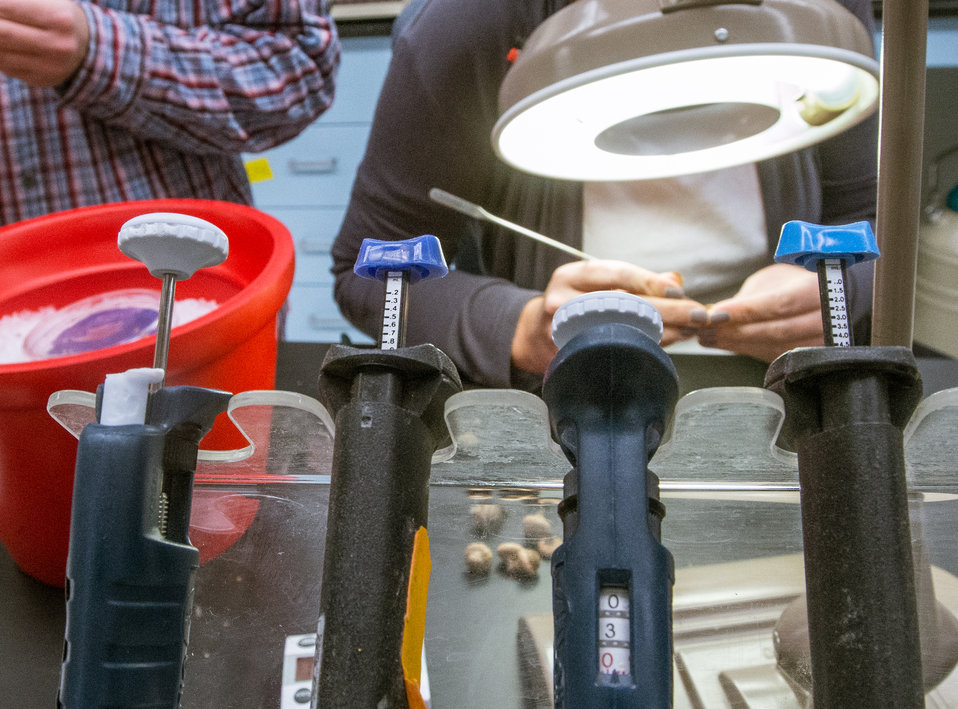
Adjustable pipettes from an opposing workstations in the foreground, as scientists, background, extract seed embryos from acorns as part of the research being conducted at the U.S. Department of Agriculture (USDA), Agriculture Research Service (ARS), National Center for Genetic Resources Preservation (NCGRP), Plant Germplasm Preservation Research Unit (PGPRU), in Ft. Collins, CO, on Wednesday, Nov. 6, 2013.